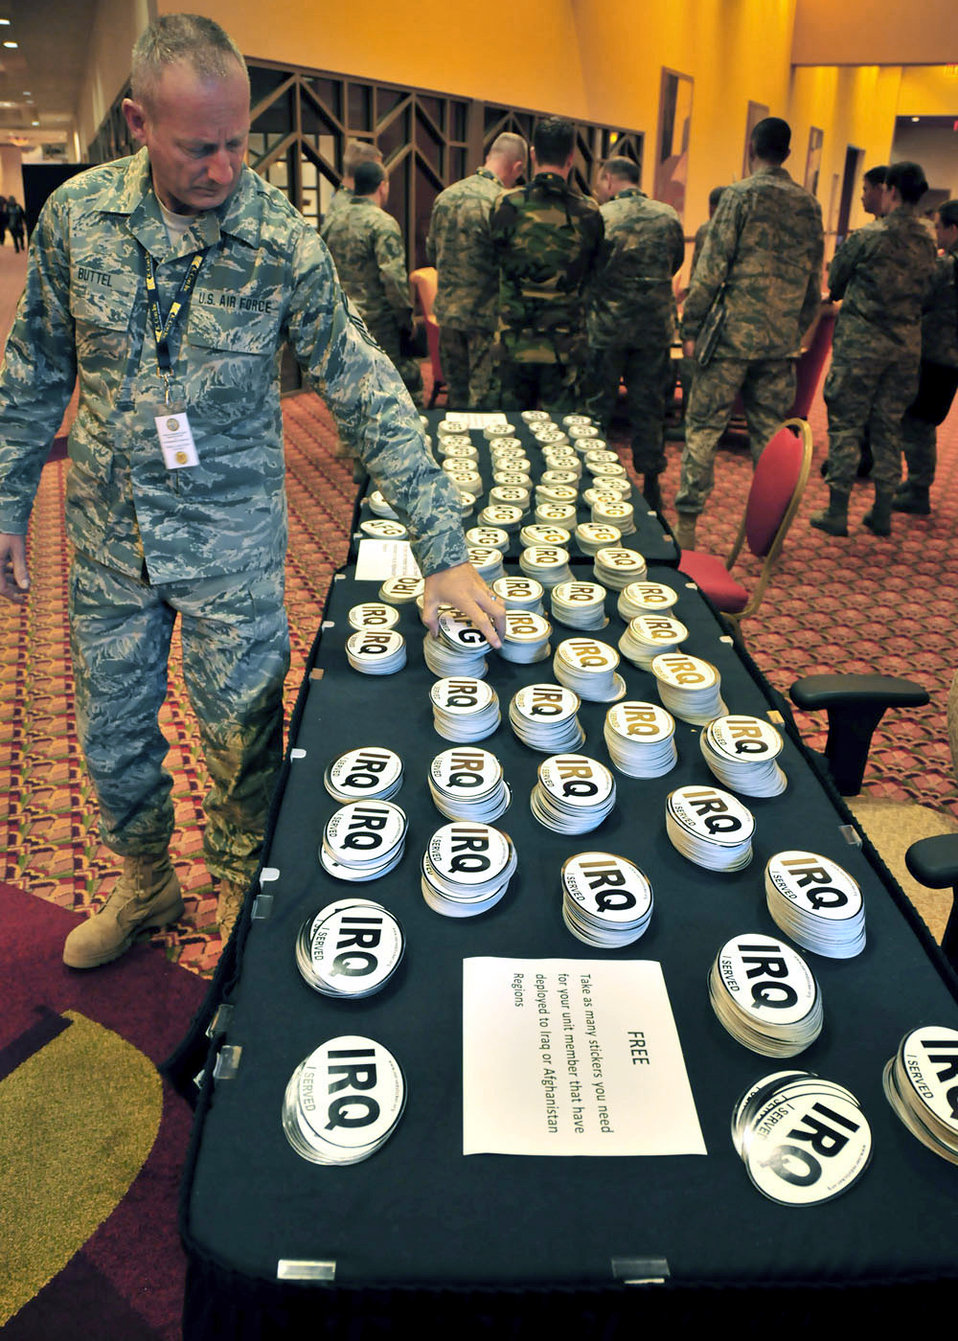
Air Guard civil engineers benefit from improvements

Deployment stickers for Iraq and Afghanistan are left out for Air National Guard civil engineers at the Civil Engineer and Security Forces Conference April 19 through 23, 2010, in Phoenix.